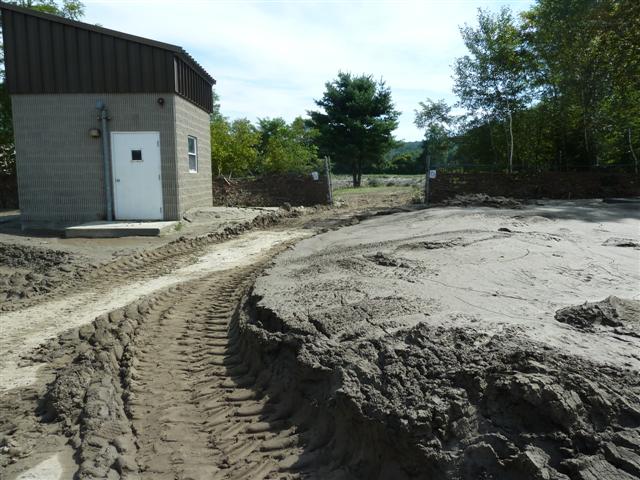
Damage at White River NFH - Bethel, VT

Mud and segment build-up